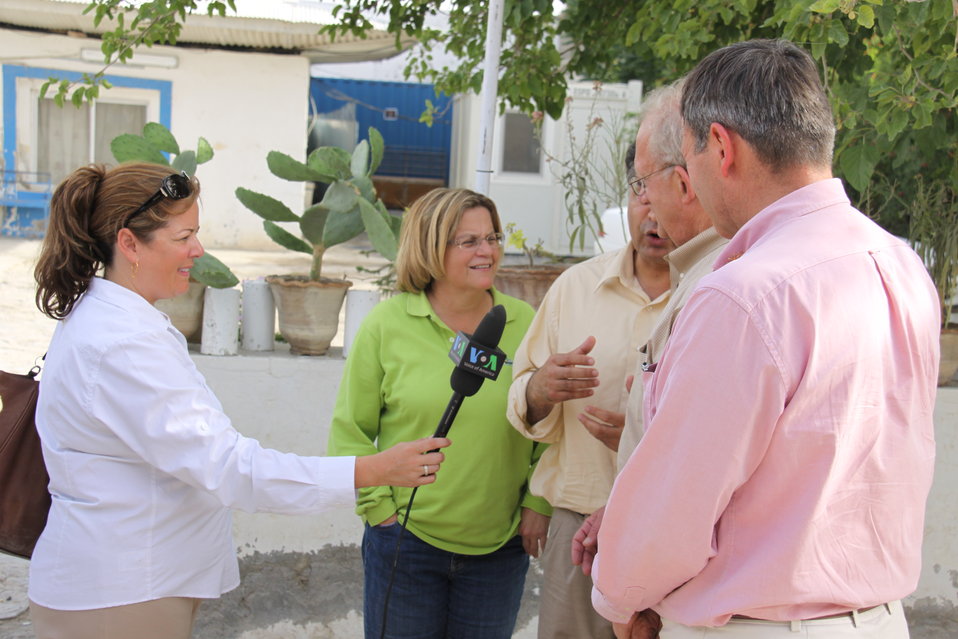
Meeting with Local Leaders in Kandahar